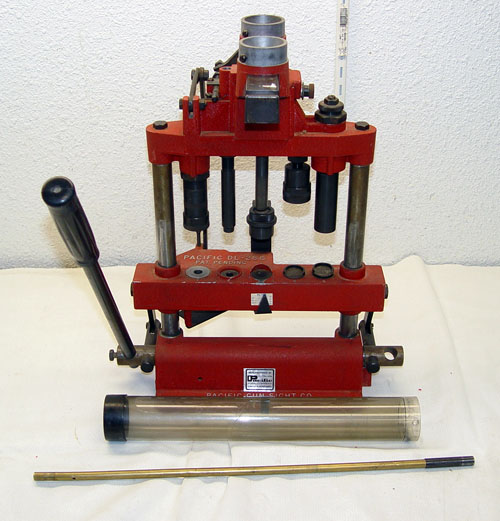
no original description